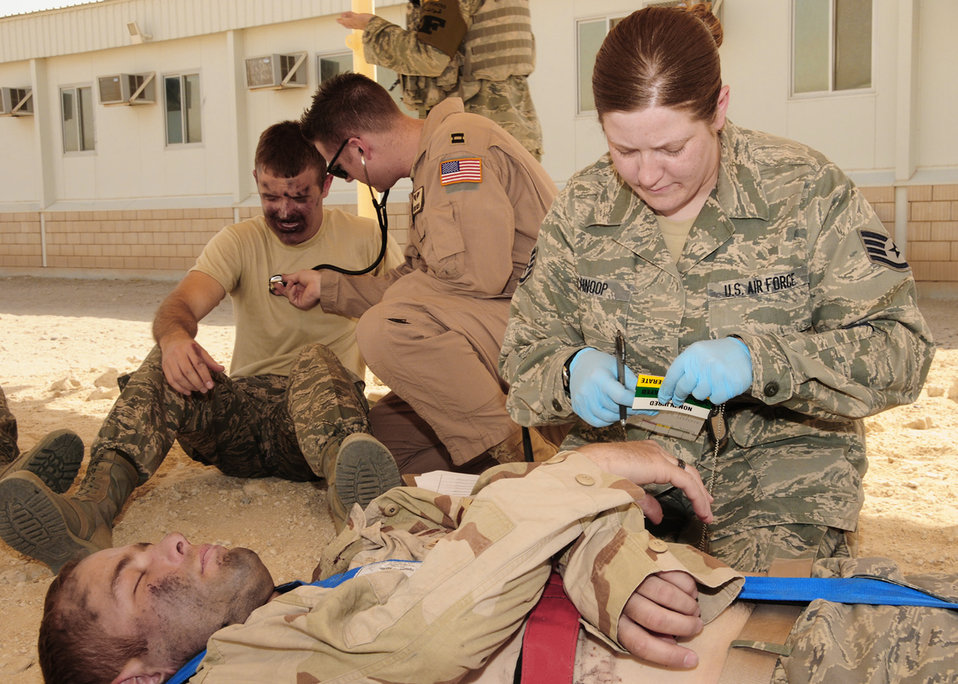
386th AEW conducts dorm fire exercise

Staff Sgt. Betty Schnoop labels a simulated victim as immediate response due to a life threatening injury, while Capt. Layne Green checks the lungs of a simulated burn victim during a dorm fire exercise June 22 at an air base in Southwest Asia, June 22. A triage tag is a tool first responders and medical personnel use during mass casualty incidents to identify the victims and to prioritize the severity of their injury. Sergeant Schnoop is assigned to the 386th Expeditionary Medical Group and deployed from Wright-Patterson Air Force Base, Ohio. She is a native of Albany, N.Y. Captain Green is assigned to the 386th Expeditionary Medical Group and deployed from Brooks City-Base, Texas. He is a native of Meridian, Idaho.